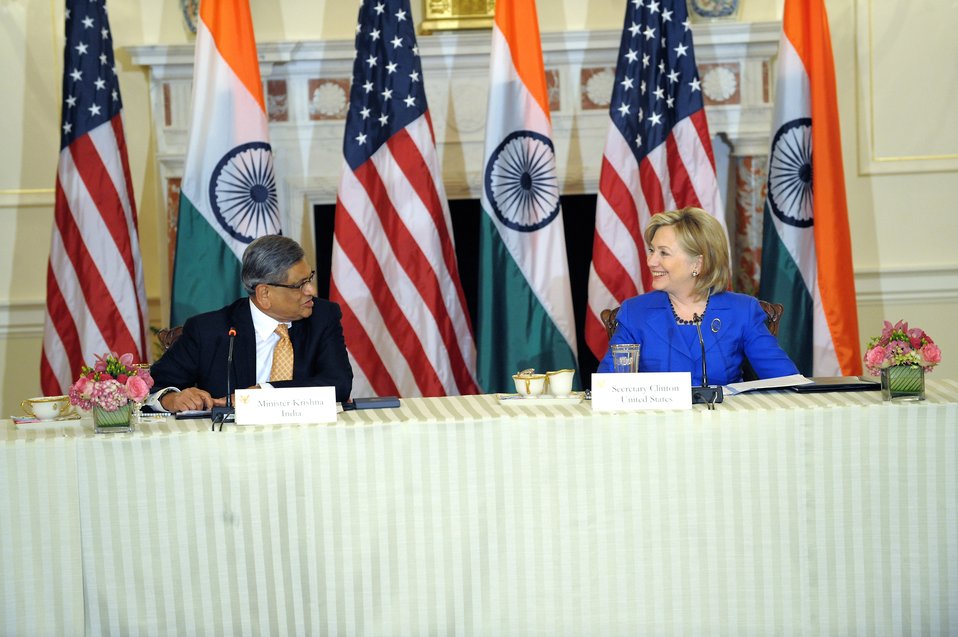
Secretary Clinton Opens Plenary With Indian Minister of External Affairs S.M. Krishna

U.S. Secretary of State Hillary Rodham opens the plenary session of the U.S.-India Strategic Dialogue with Indian Minister of External Affairs S.M. Krishna in the Ben Franklin Room at the U.S. Department of State in Washington, D.C., on June 3, 2010.